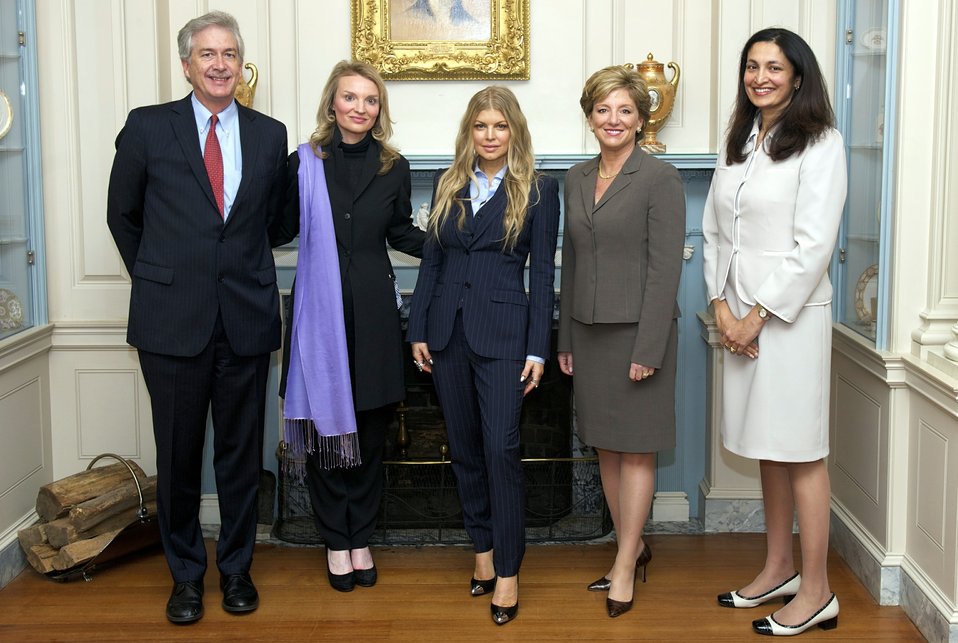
Deputy Secretary Burns, Vital Voices CEO Nelson, Avon Global Ambassador Fergie, Avon Products CEO McCoy, and Assistant Secretary Zerya Pose for a Photo

From left to right, Deputy Secretary of State Bill Burns; Alyse Nelson, President and CEO of Vital Voices; Avon Global Ambassador Fergie; Sheri McCoy, CEO of Avon Products, Inc.; and Acting Assistant Secretary for Democracy, Human Rights and Labor Uzra Zeya pose for a photo at the launch of the Gender-Based Violence Emergency Response and Protection Initiative at the U.S. Department of State in Washington, D.C., on March 20, 2014.